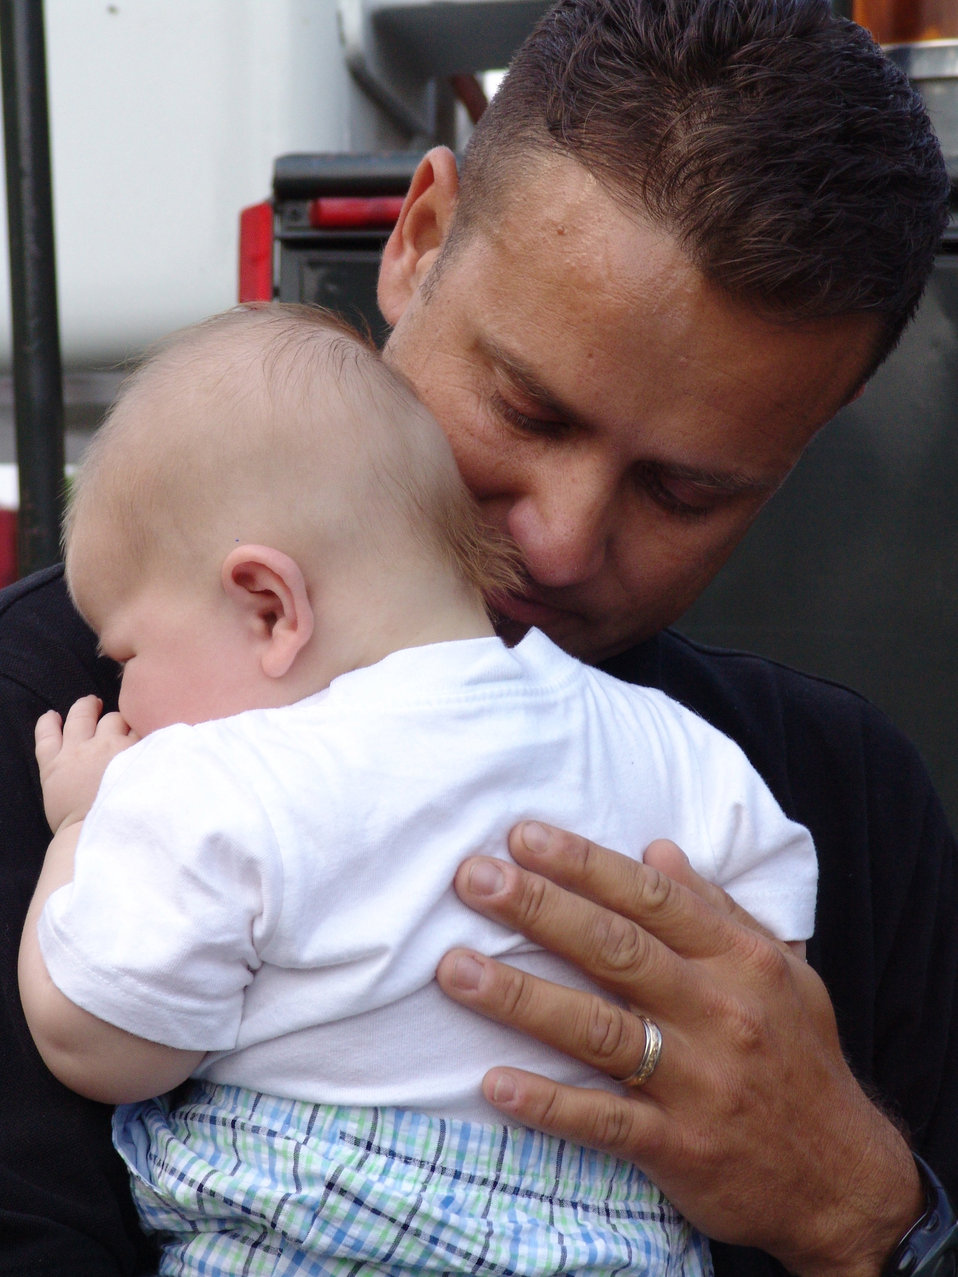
Happy huggy homecoming

EGLIN AIR FORCE BASE, Fla. -- Tech. Sgt. Chuck Retherford holds his 3-month-old son, Christian, for the first time May 11 upon his return from a deployment supporting Operation Iraqi Freedom. Families and friends welcomed 73 Airmen returning from Balad Air Base, Iraq, who are assigned to the 96th Civil Engineer Squadron and the 96th Logistics Readiness Squadron here. Sergeant Retherford is assigned to the 96th CES.